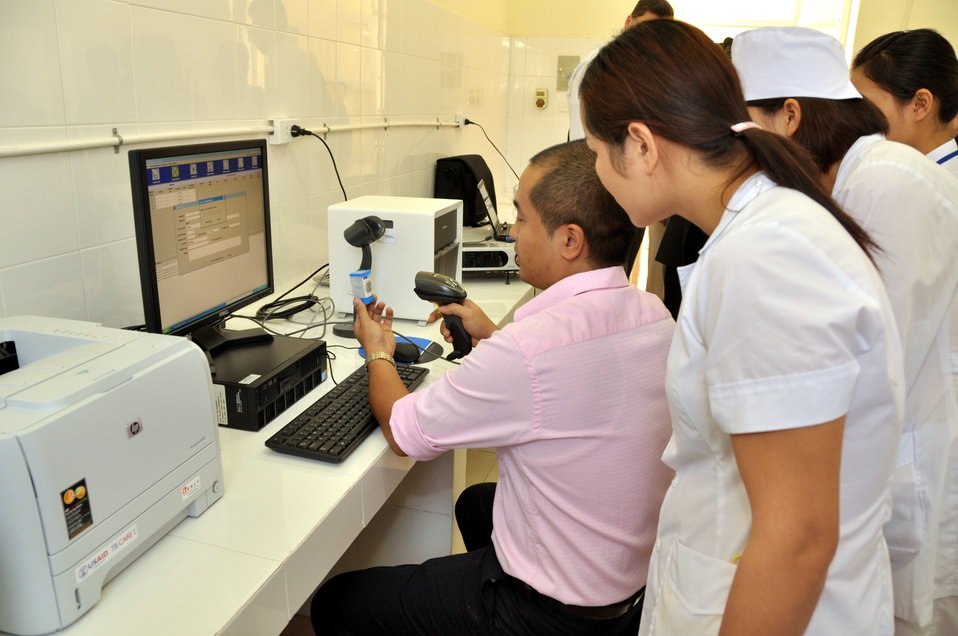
USAID supports new rapid detection TB equipment